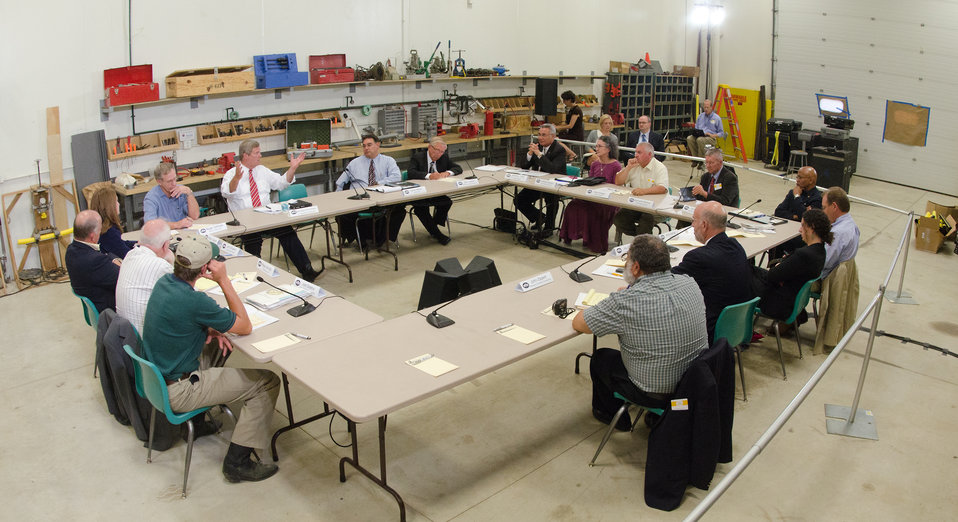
Agriculture Secretary and chair of the White House Rural Council, Tom Vilsack, meets with Iowa stakeholders at the Northeast Iowa Community College, IA, after the White House Rural Economic Forum, on Tuesday, Aug. 16, 2011.